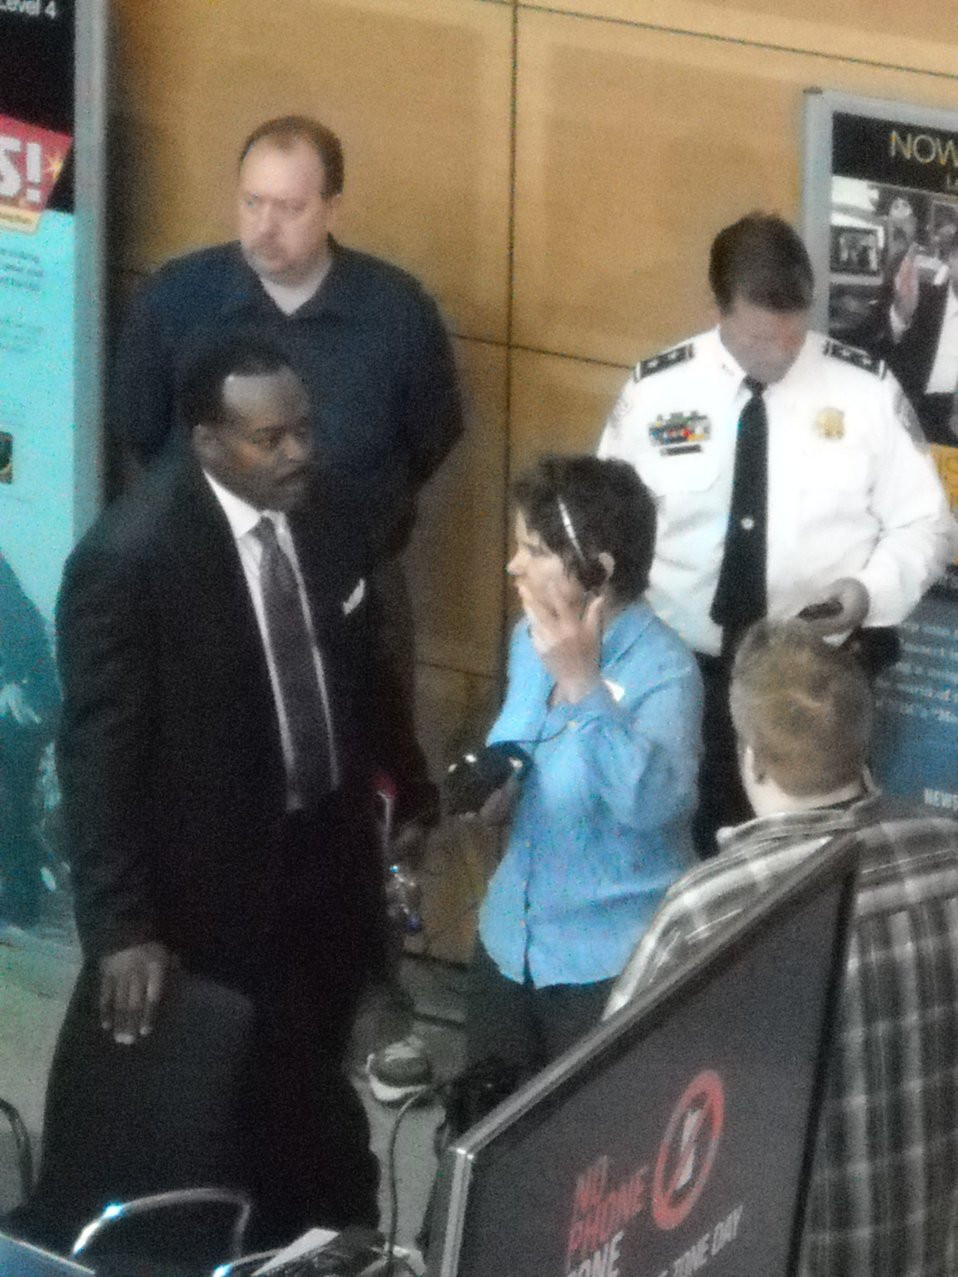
National No Phone Zone Day Newsum Washington, DC April 30, 2010 037